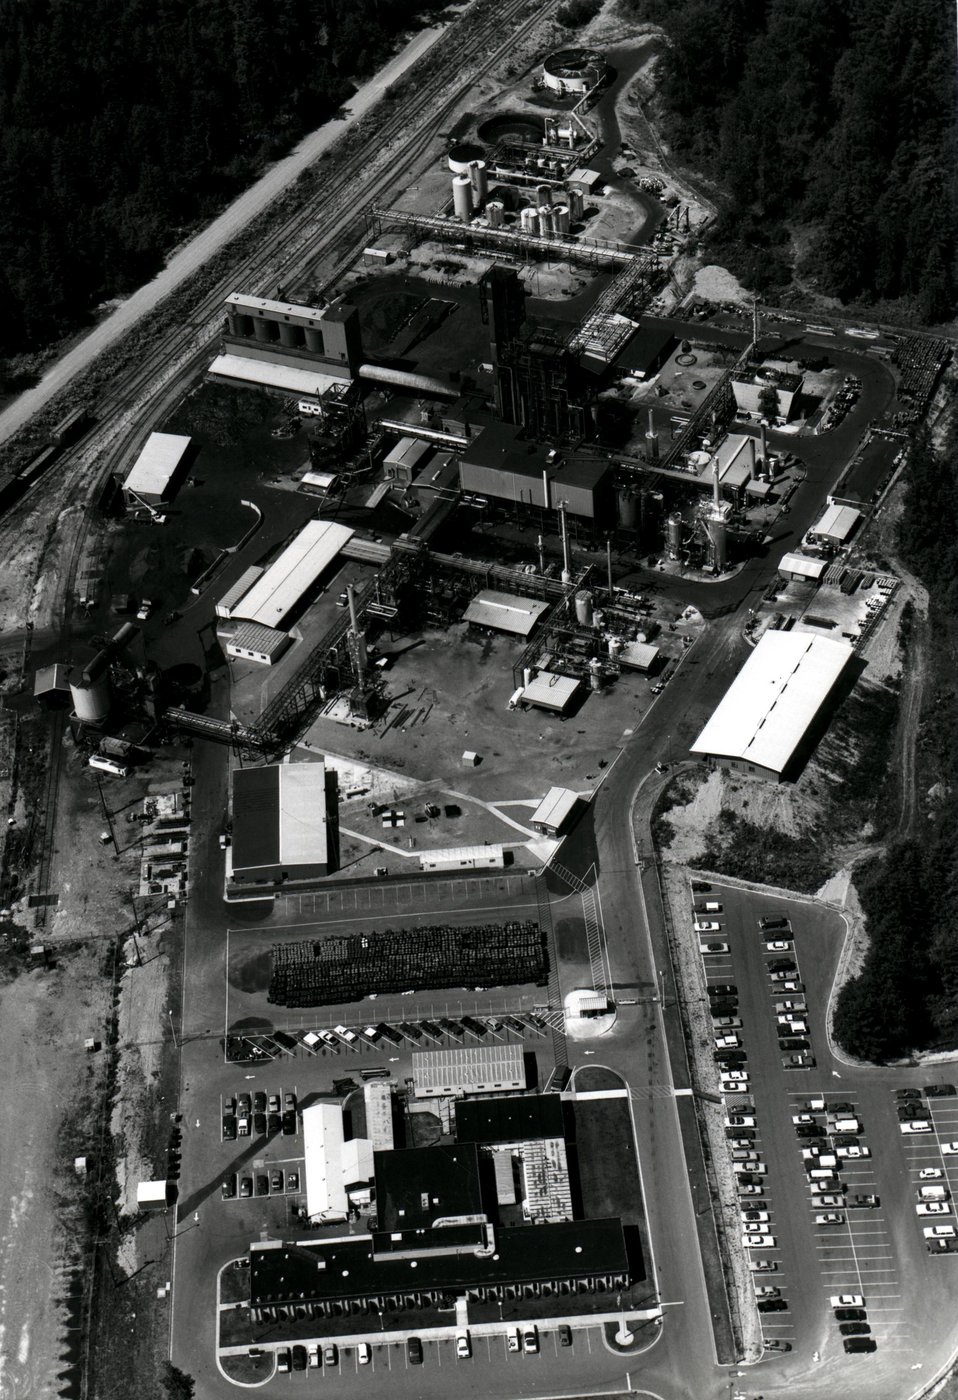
Solvent Refined Coal Plant. Circa 1979.